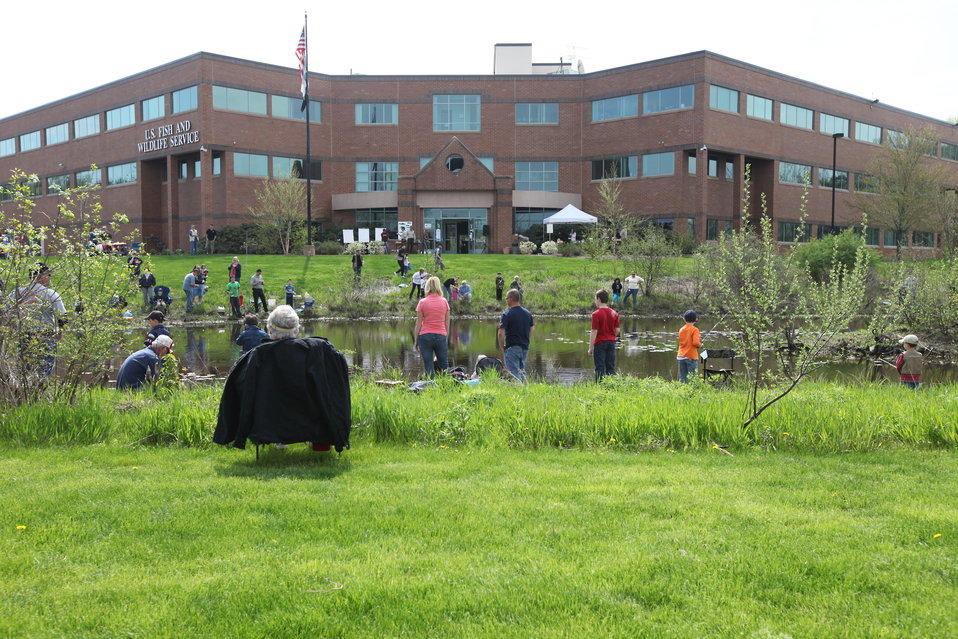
Annual USFWS fishing derby

At the USFWS regional office in Hadley, MA, May 7th.